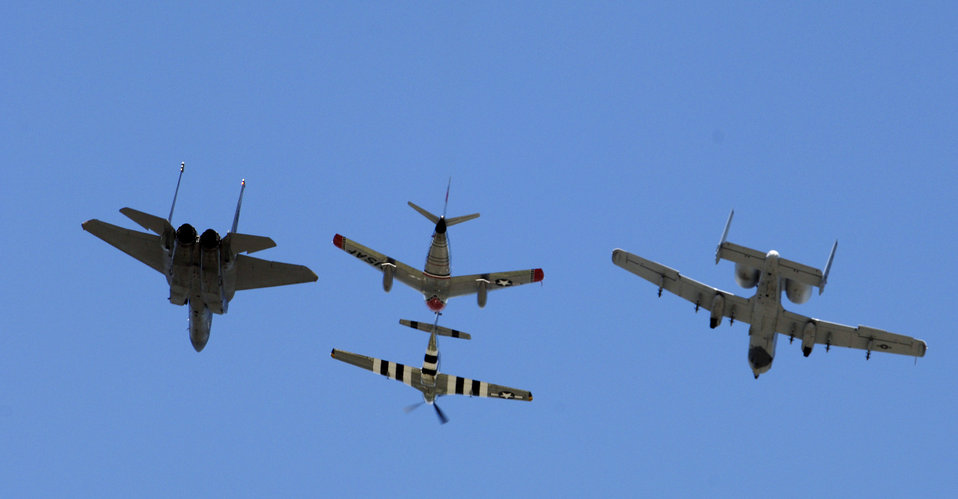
General Moseley swears in as Air Force's 18th chief of staff

ANDREWS AIR FORCE BASE, Md. - A heritage flight consisting of an F-15 Eagle, an A-10 Thunderbolt II, a P-51 Mustang and an F-86 Sabre fly overhead during a ceremony here retiring Gen. John P. Jumper and swearing in Gen. T. Michael Moseley as the new Air Force chief of staff Sept. 2. General Jumper served in the Air Force for 39 years. General Moseley served as Air Force vice chief of staff.